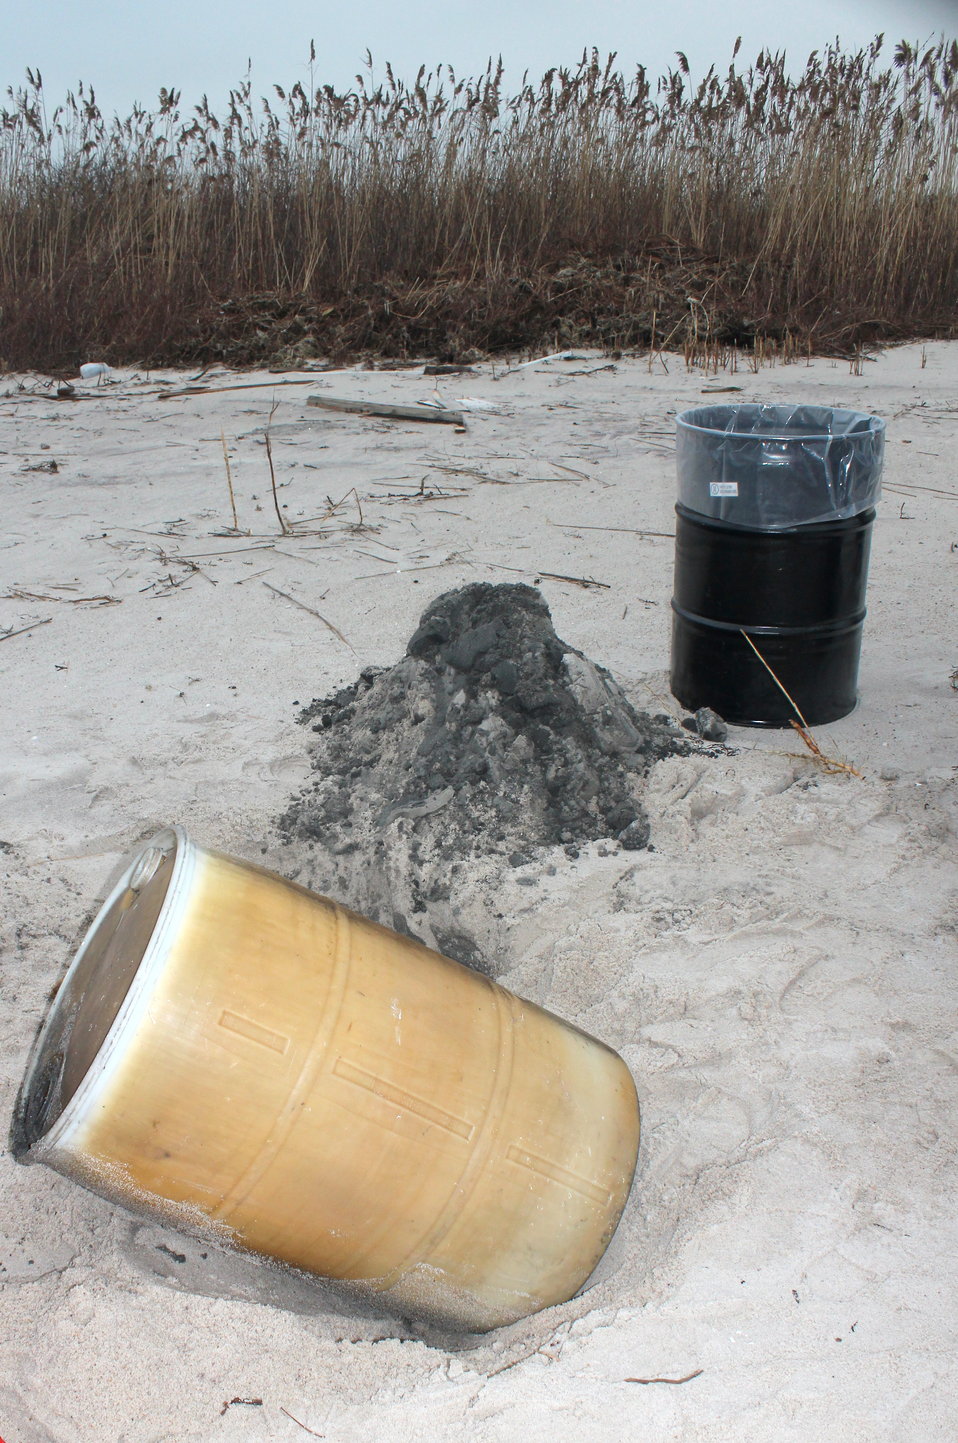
December 8, 2012 Leaking barrel safely removed from beach

Oil stained sand just before it was contained in the black drum in the background. Foreground: leaking barrel caught just in time. When it was carefully removed, most of the oil still remained inside.